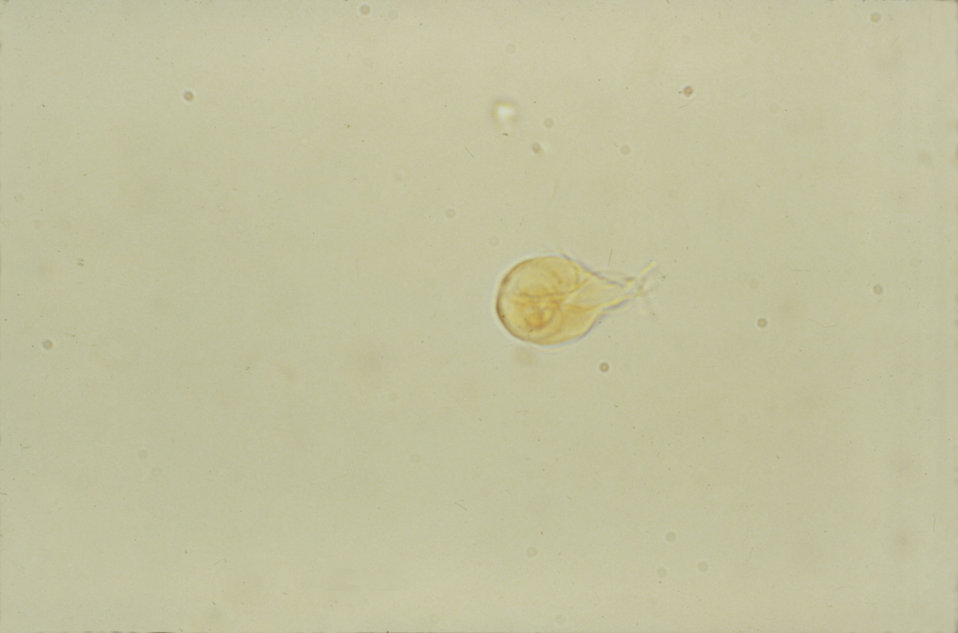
This iodine stained image depicts a Giardia sp. trophozoite and its visible flagella.